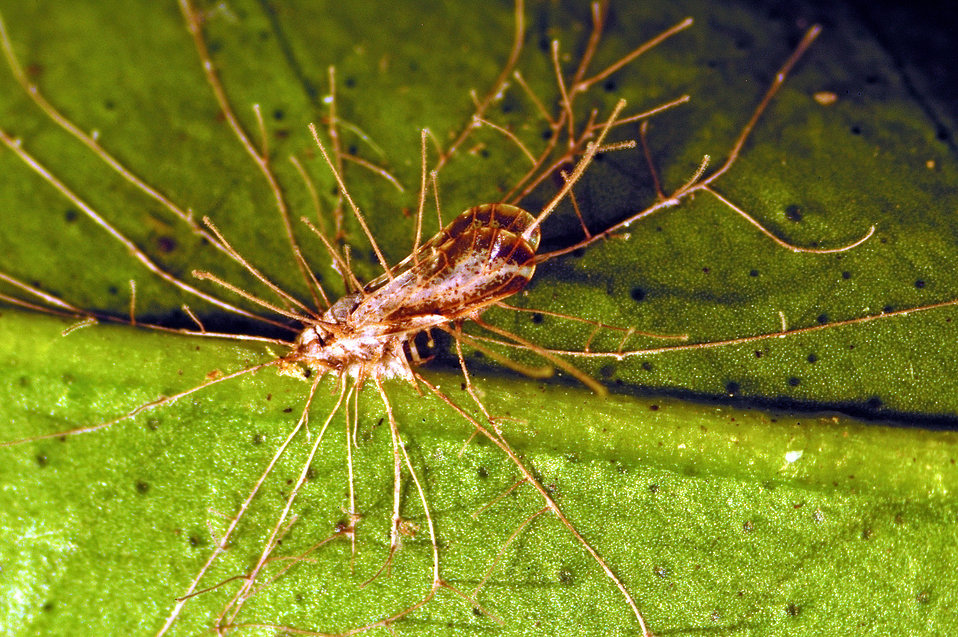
An adult Asian citrus psyllid killed by a biocontrol fungus on Nov. 22, 2005. This beneficial fungus may prove useful in battling the psyllid, which is spreading a devastating citrus disease in the U.S.